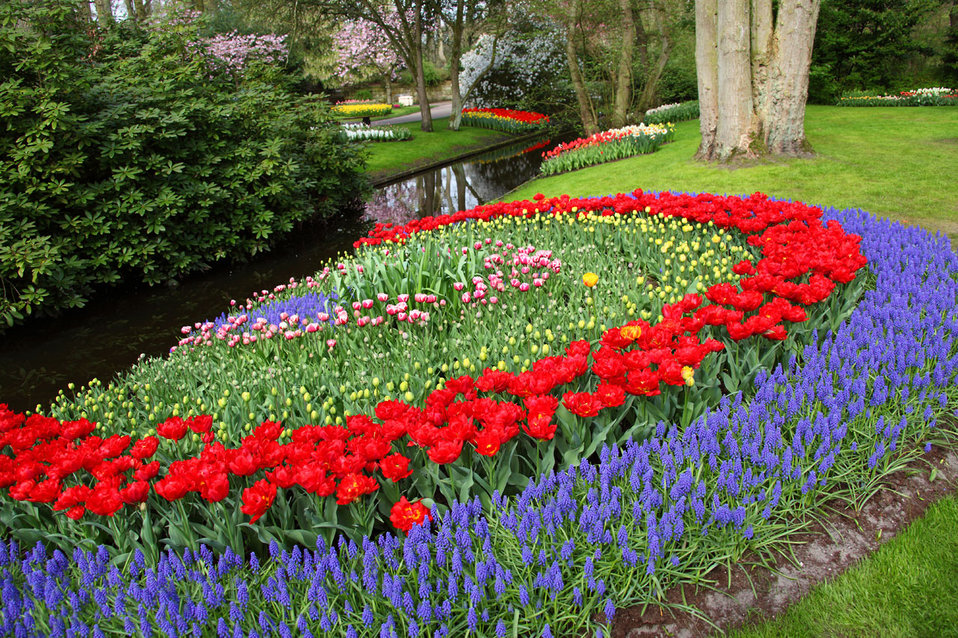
Keukenhof gardens

Flowers in keukenhof gardens.